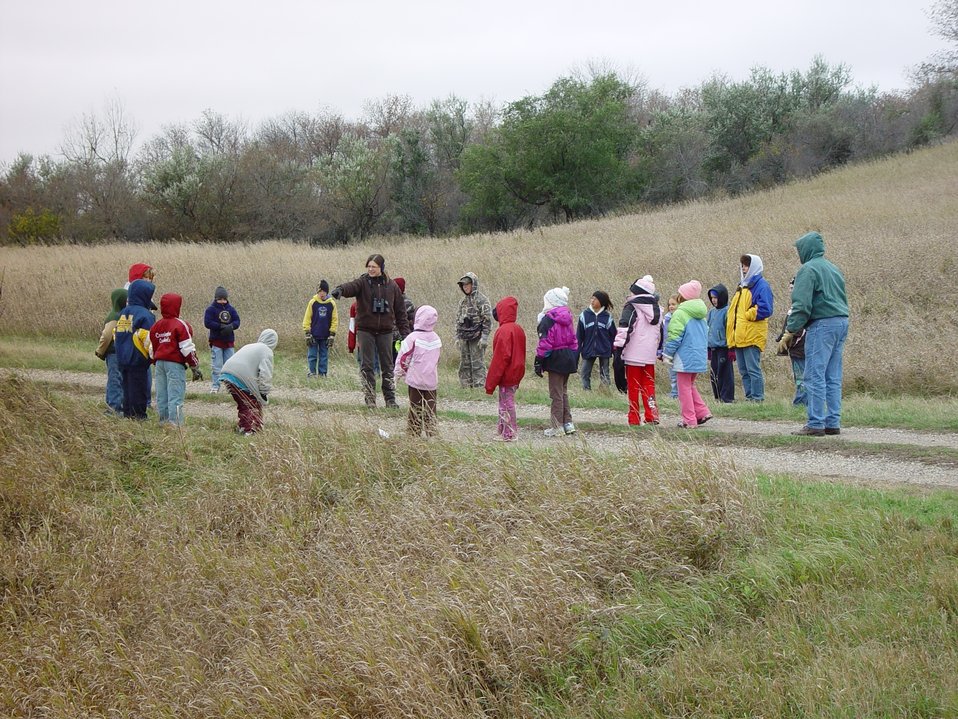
Arrowwood National Wildlife Refuge

Arrowwood NWR manager Stacy Whipp speaks with a group of school children during National Wildlife Refuge Week.